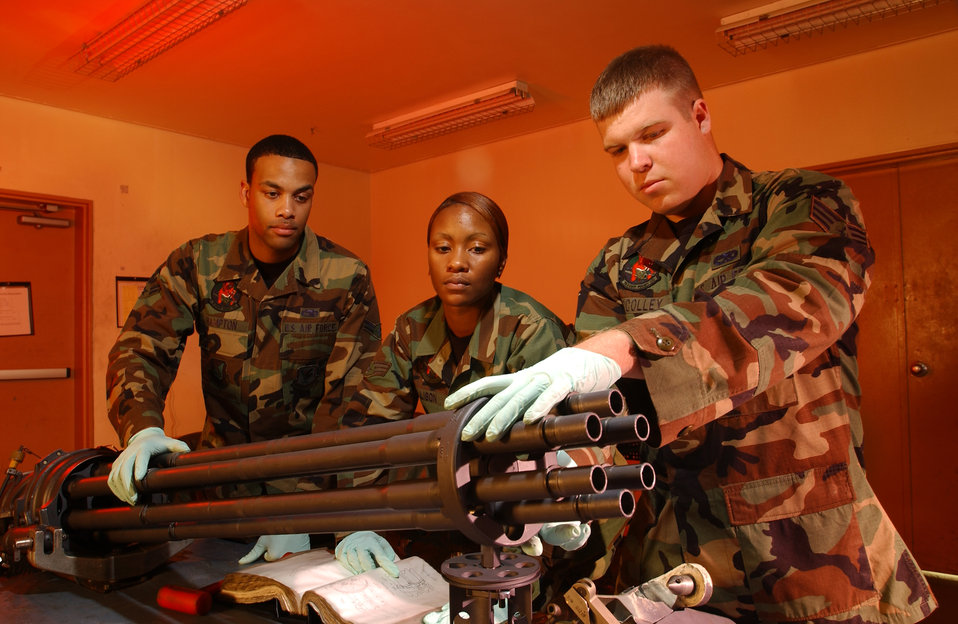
Ready to fire

KADENA AIR BASE, Japan -- Senior Airman Chris McColley (right), slides the center clamp of the M61A1 gun into place as Senior Airman Sharon Ellison (center) and Airman 1st Class Calvin Hampton Jr. (left), aid in preparing the gun for test firing. The Airmen are assigned to the 18th Equipment Maintenance Squadron.